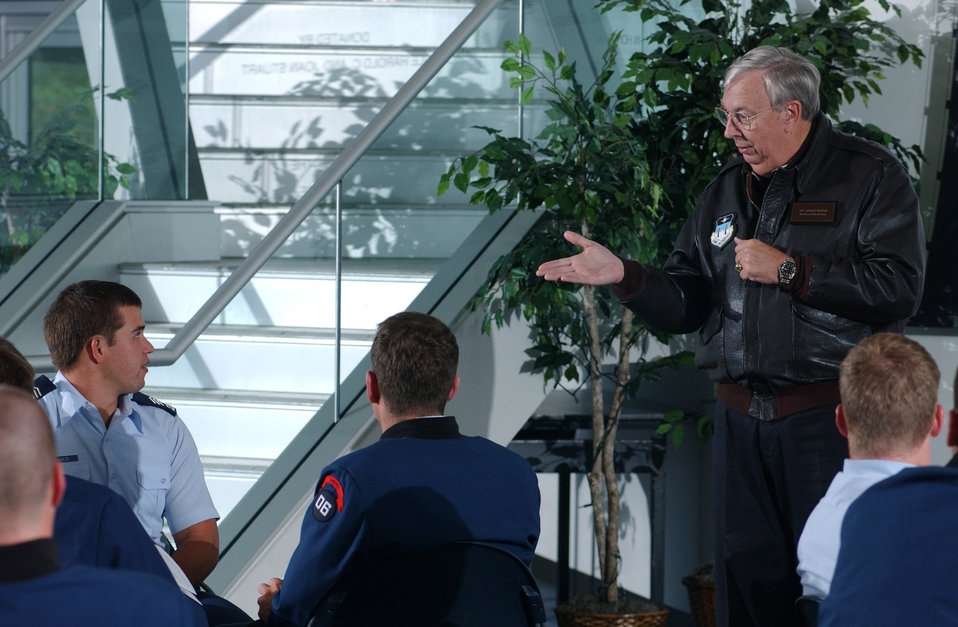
The doctor is in

U.S. AIR FORCE ACADEMY, Colo. -- Secretary of the Air Force Dr. James G. Roche speaks to cadets here during a seminar Sept. 28. The Leaders in Flight Today seminar is an eight-hour meeting that helps the cadets better understand others and themselves. Secretary Roche talked to cadets about different leadership styles, the significance of command and how it teaches you how to understand yourself.